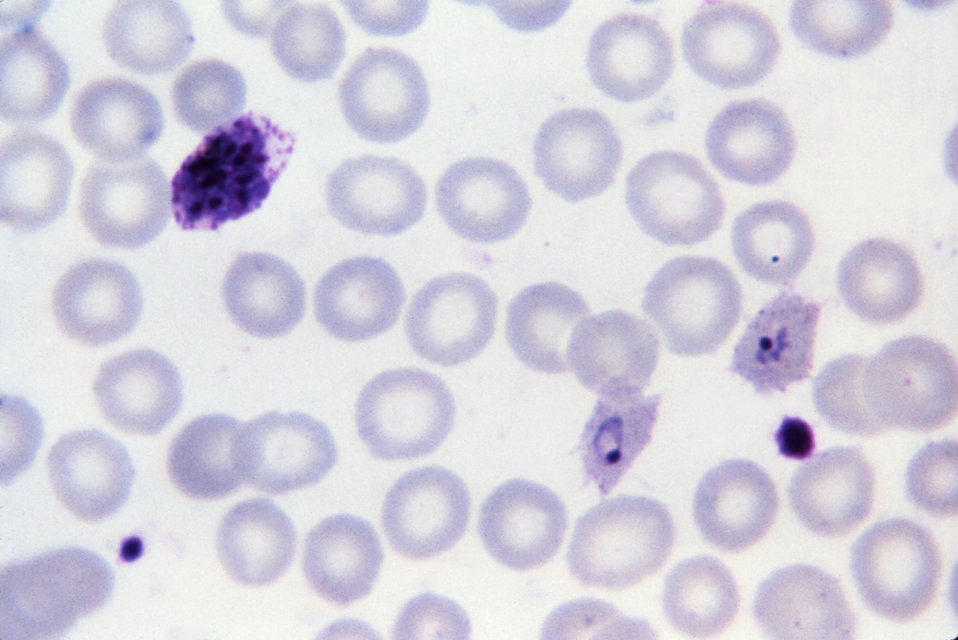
This thin film Giemsa stained micrograph shows two ring-form trophozoites and an older, immature P. ovale schizont.